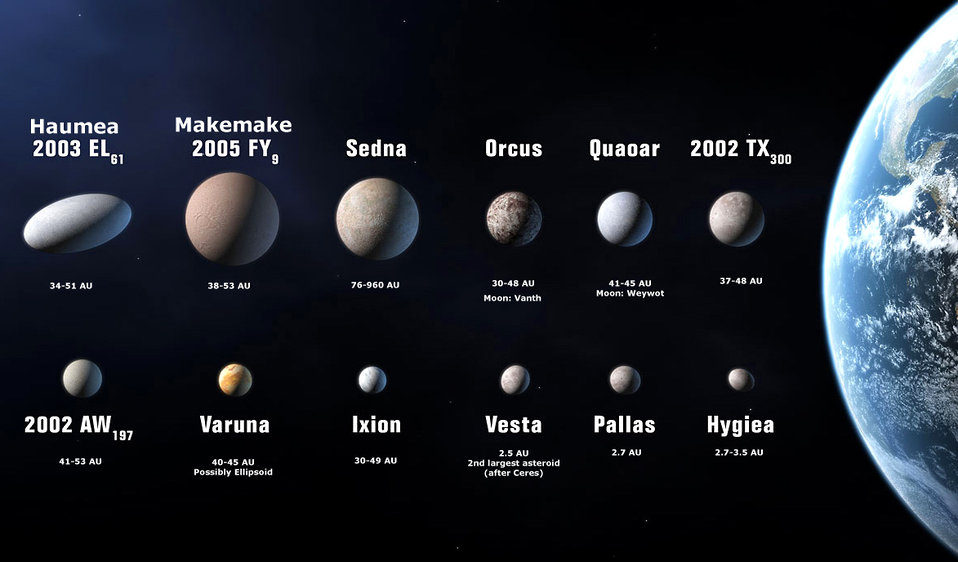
This is an edited and augmented version of a previously existing Wiki image, 'Iau dozen.jpg,' List of 12 Planet candidates per the IAU 2006 draft proposal XXVI, dating from 2007-07-23. Revised image includes additional information including approximate A.U. distance figures for the depicted bodies, as well as approved names for 2003EL61 (Haumea) and 2005FY9 (Makemmake), not present on the original version.